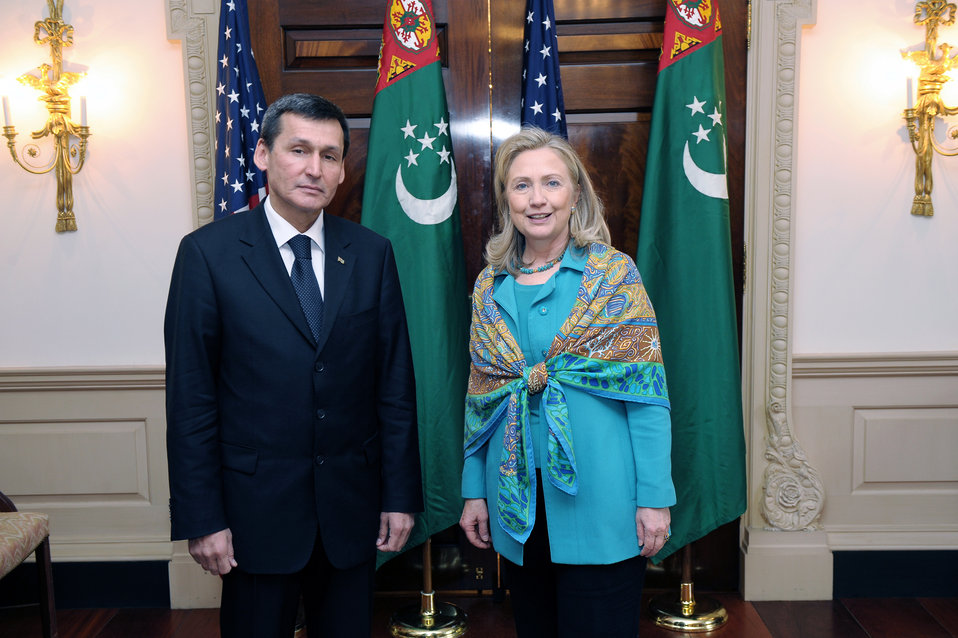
Secretary Clinton Meets With Turkmenistan Foreign Minister Meredov

U.S. Secretary of State Hillary Rodham Clinton meets with Turkmenistan Foreign Minister Rashid Meredov at the Department of State in Washington, D.C. on March 22, 2012.